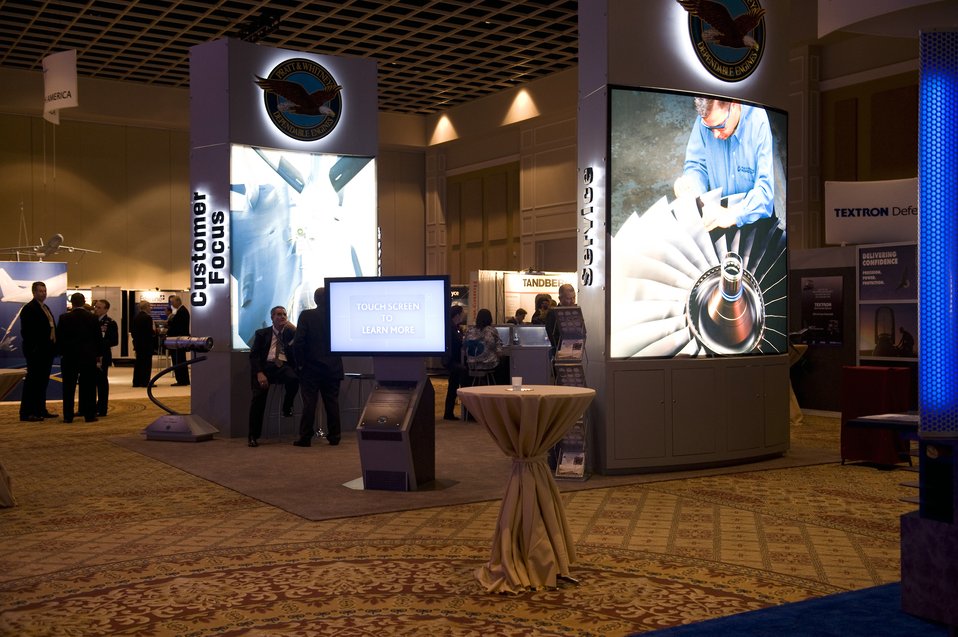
Generals discuss Guard, Reserve, on call Air Force

The Air Force Association's Air Warfare Symposium and Technology Exposition showcases the latest military technology Feb. 18, 2010, at the Rosen Shingle Creek Hotel in Orlando, Fla.